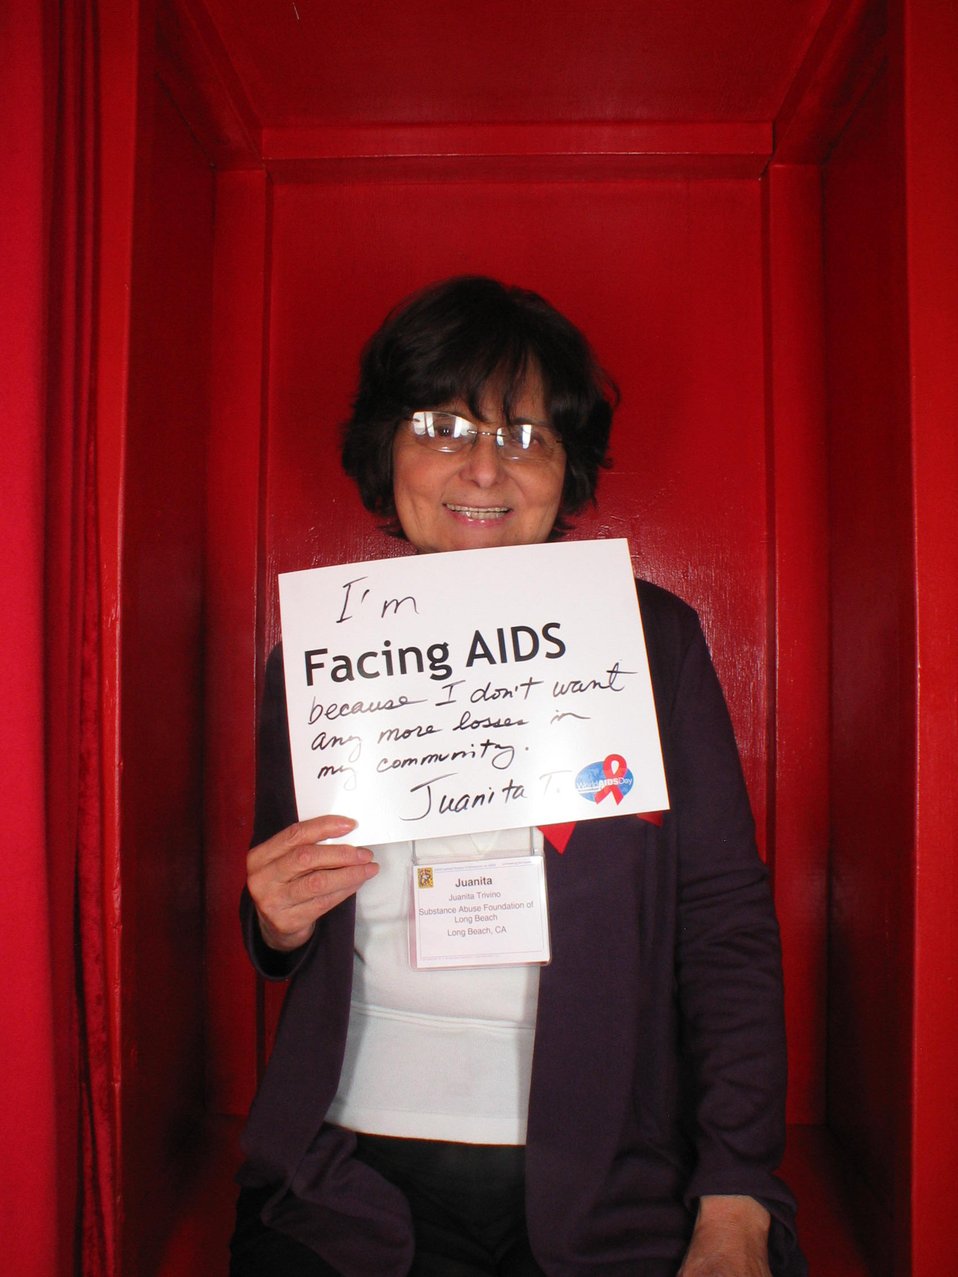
I'm Facing AIDS because I don't want any more losses in my community.